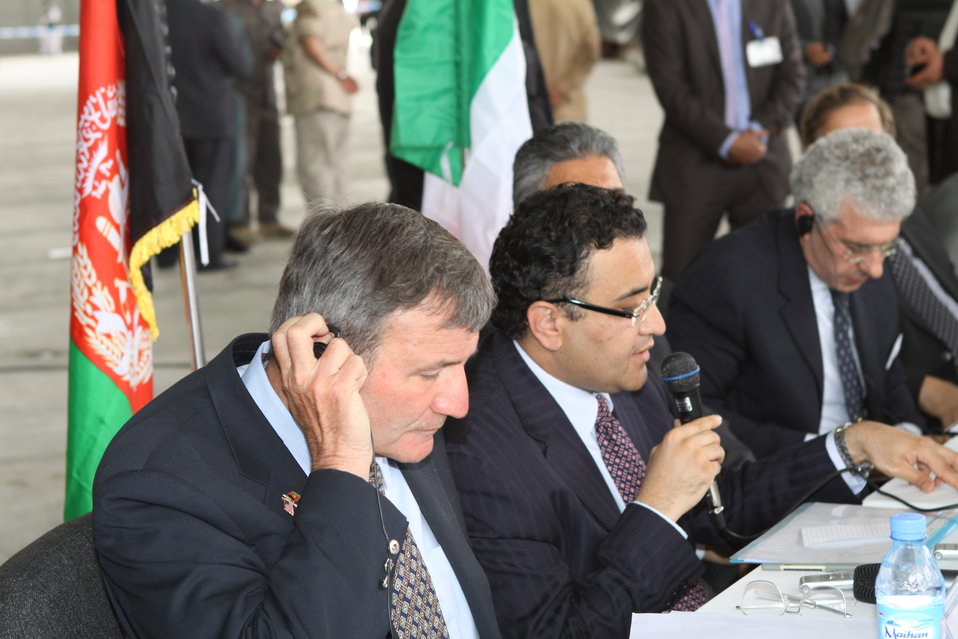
100525 Hirat Marble Conference 360